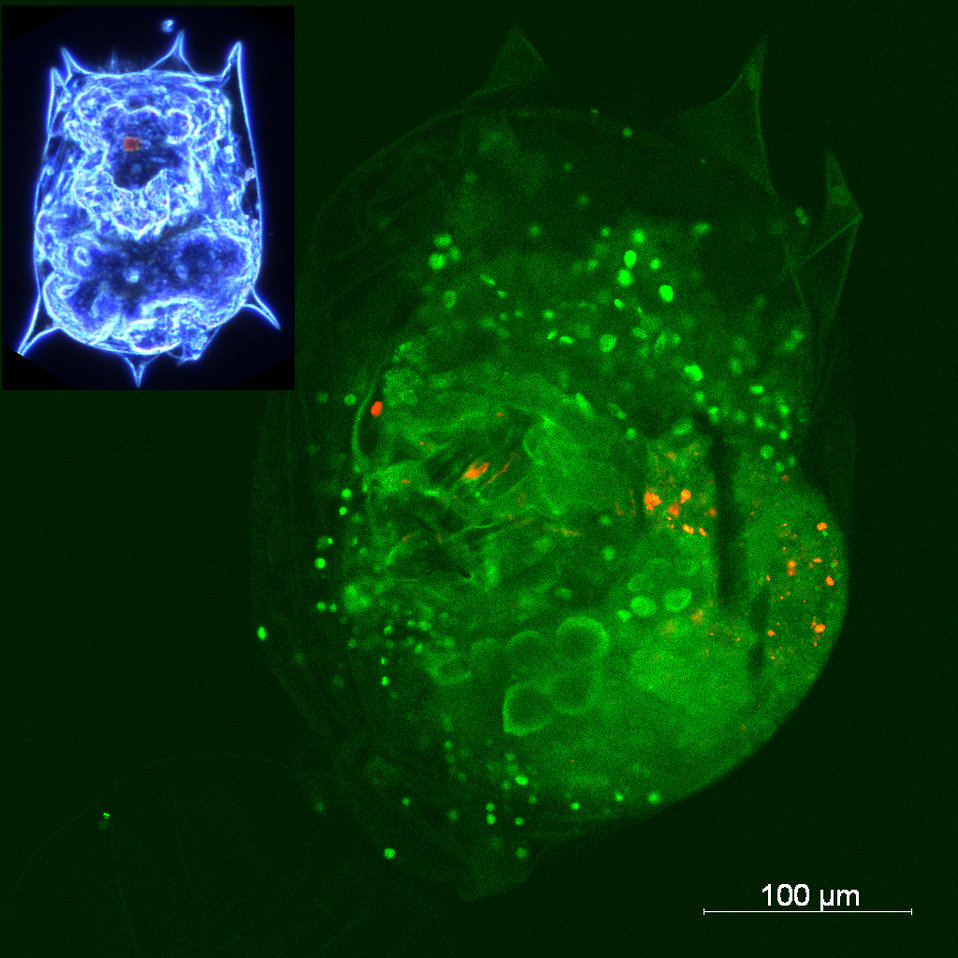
Nanodots Moving Up Model Food Chain

Closeup photomicrograph of rotifer B. calyciflorus (whole organism seen in upper left corner) with quantum dots assimilated from ingested ciliates appearing red.